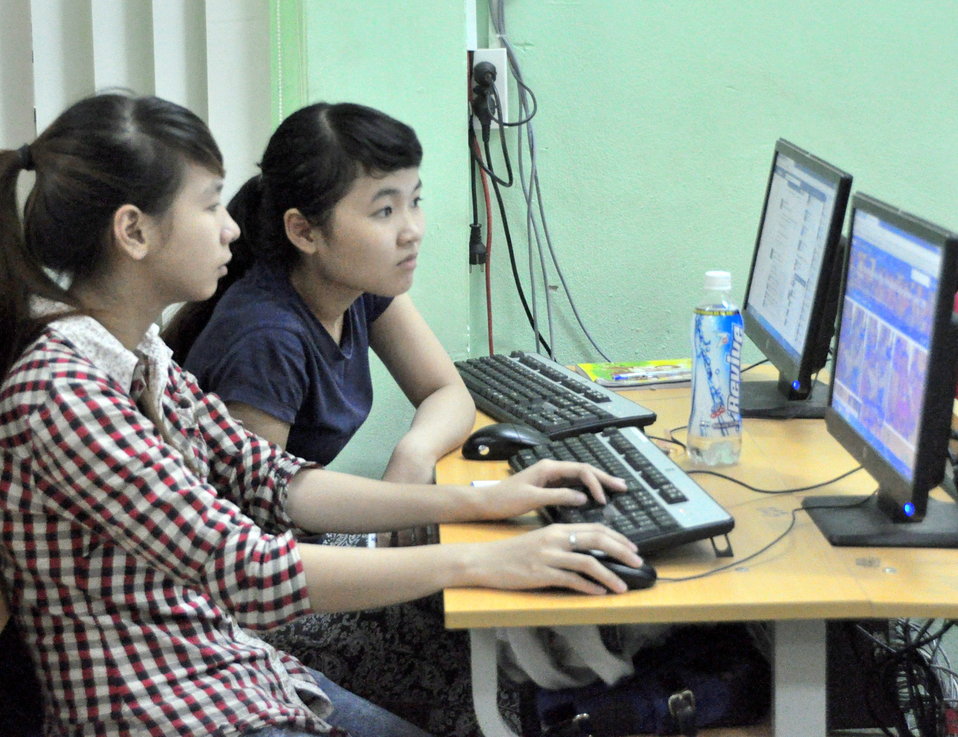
USAID Visits IT Training Program for People with Disabilities at Dong A University

Danang, Vietnam
July 17, 2013